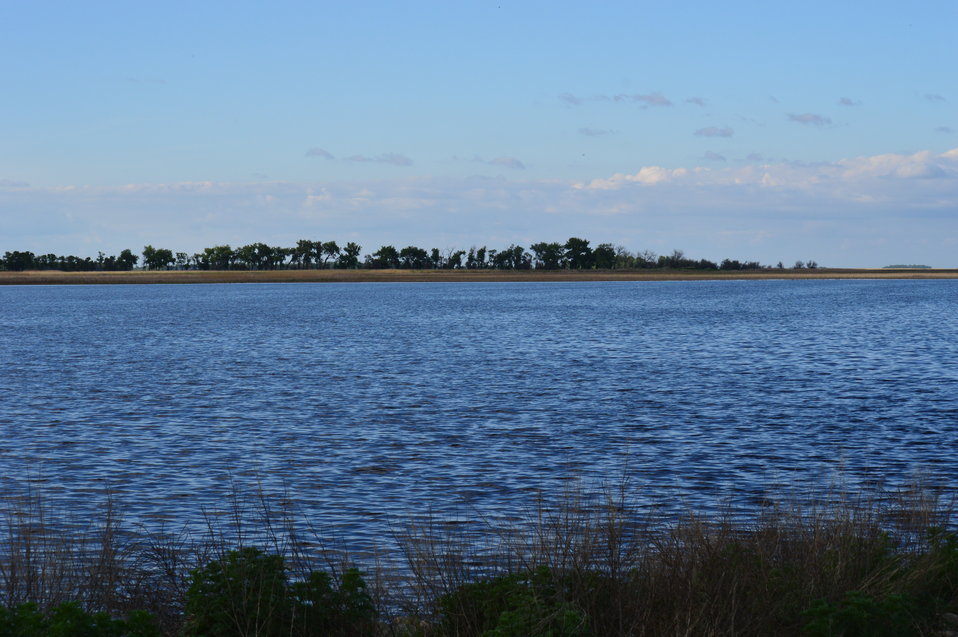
View of Sand Lake

Scenery and wildlife at Sand Lake National Wildlife Refuge in South Dakota